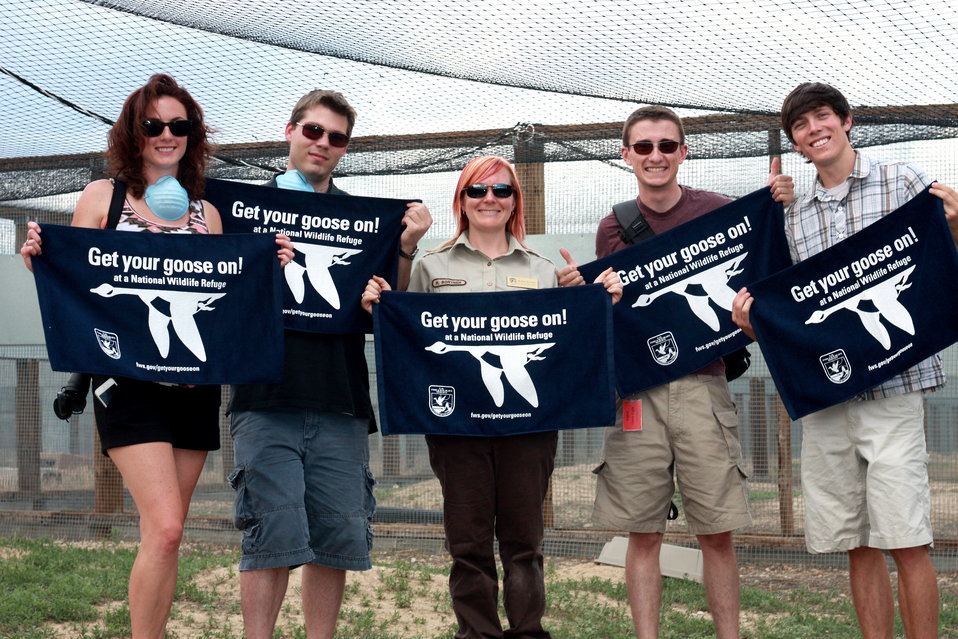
Interns visit the NBFFCC

In the summer of 2012, USFWS Region 6 interns visited the National Black-footed Ferret Conservation Center (NBFFCC) in Colorado to learn how the program reintroduces the endangered Black-footed ferret back into its native habitat.

Here, the region 6 summer interns 'Get their Goose on' at the NBFFCC!